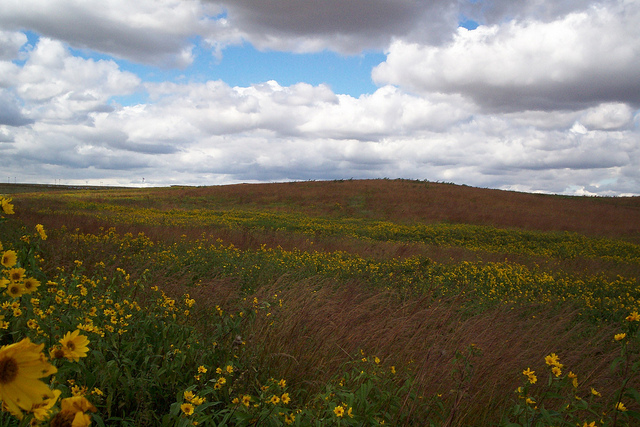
prairie in bloom

Neal Smith National Wildlife Refuge